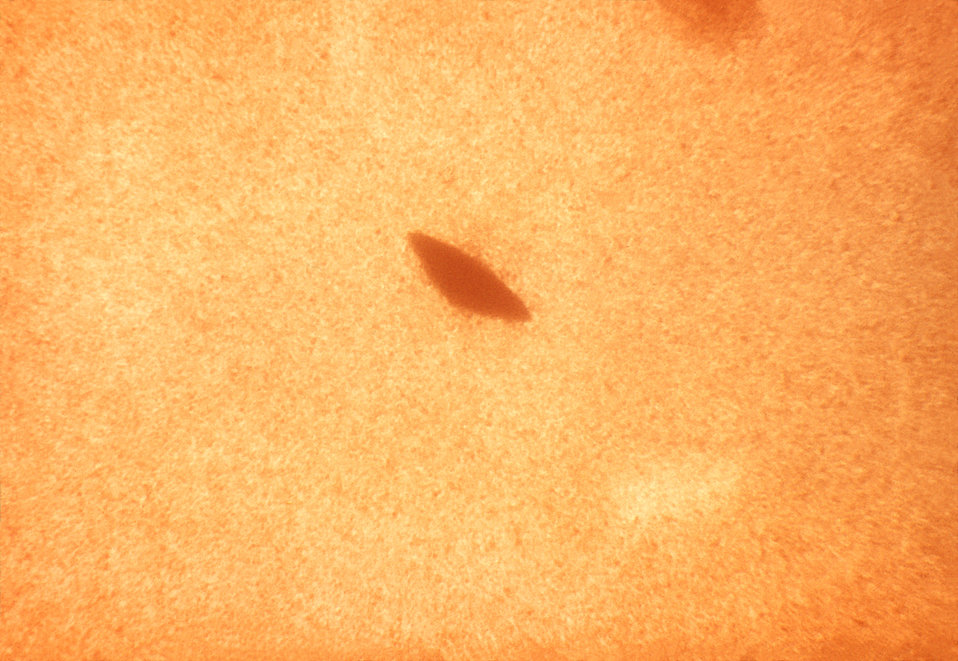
This photograph depicted a colony of a Streptococcus salivarius growing in the Petri dish filled with trypticase soy agar with 5% sheep's blood, (BAP). A loop of diluted culture of S. salivarius was put into the melted agar (50oC) just before the blood was added. The melted agar with blood was allowed to solidify, and then incubated at 35oC for 24 hours in a normal atmosphere. The culture grew subsurface bacterial colonies, one of which is seen here. There were no color changes in the region surrounding the colony, indicating that the red blood cells in the blood agar medium have not been altered in any way, which meant that these bacteria were indeed non-hemolytic in nature.